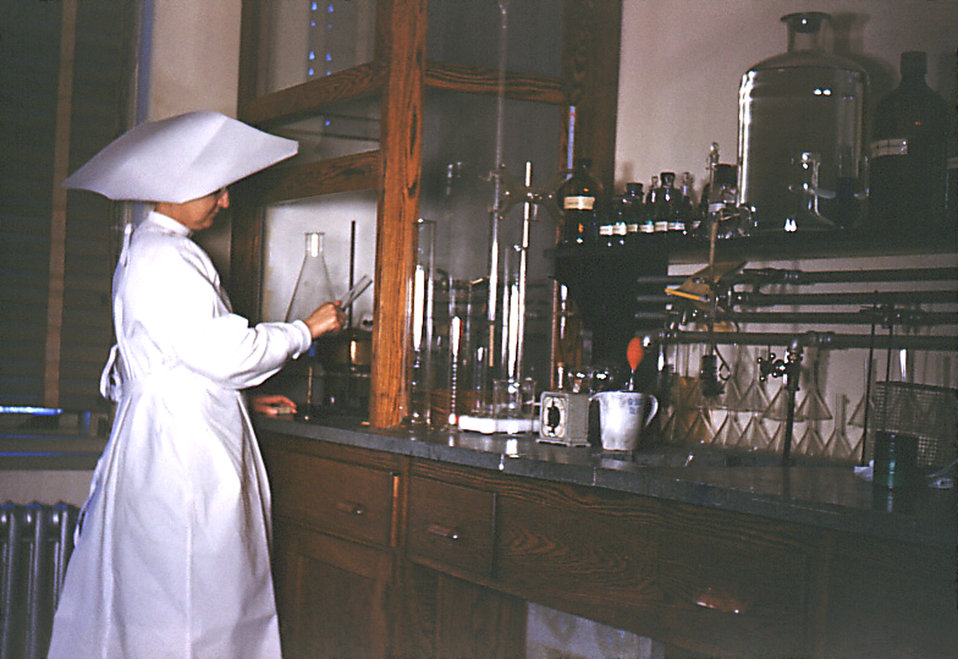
Depicted in this historic image was the interior of the Blood Chemistry room in the Carville, Louisiana Leprosarium's infirmary, where blood samples that had been drawn from hospital patients, were tested for various reasons. This staff Sister was in the process of conducting one of the requisite tests that had been ordered by a physician. The "Sisters' of Charity" were members of the leprosarium staff, and until recently, there were 21 Sisters on staff. The first group of four Sisters of the order founded by St. Vincent de Paul, and officially named Daughters of Charity, arrived at Carville, April 27, 1896, with Sister Beatrice Hart in charge. The sisters volunteered their services, in order to nurse the sufferers of leprosy who'd sought help at the leprosarium.